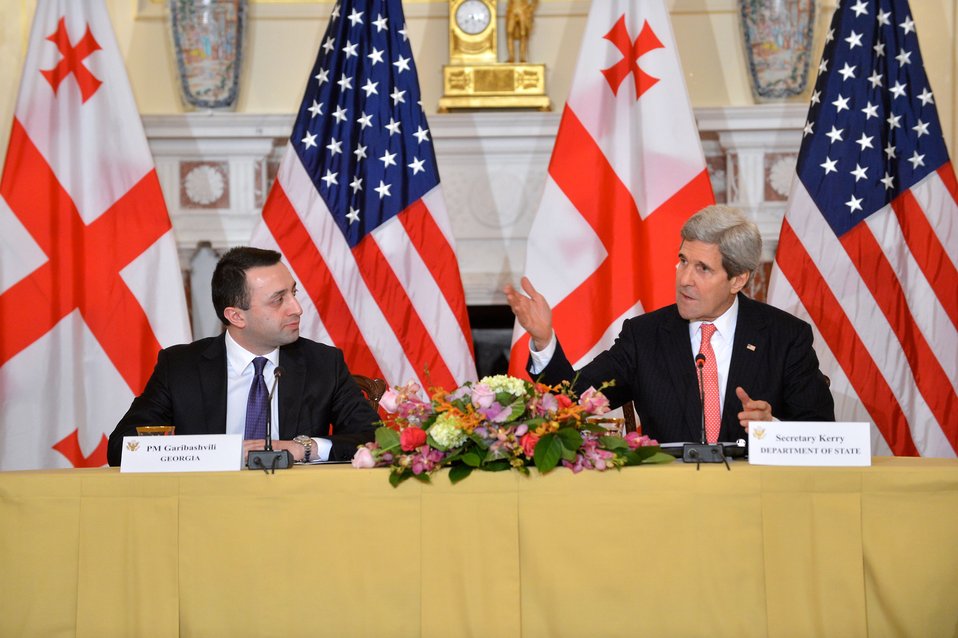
Secretary Kerry and Georgian Prime Minister Garibashvili Address the U.S.-Georgia Strategic Partnership Commission Plenary Session

U.S. Secretary of State John Kerry and Georgian Prime Minister Irakli Garibashvili deliver remarks at the U.S.-Georgia Strategic Partnership Commission Plenary Session at the U.S. Department of State in Washington, D.C., on February 26, 2014.